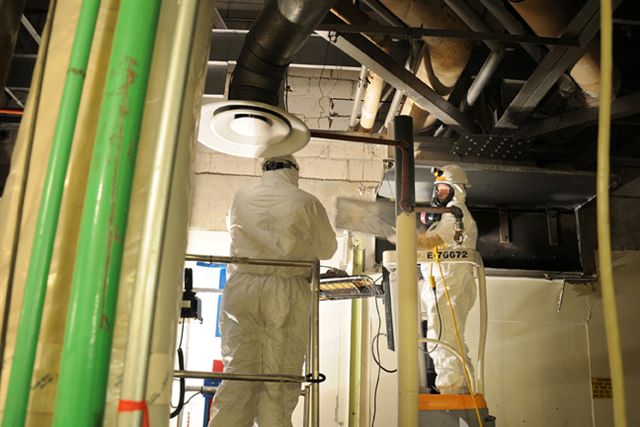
RAN DD INTEC S84 CPP-602 UPSTAIRS 072610 P6554-40 A